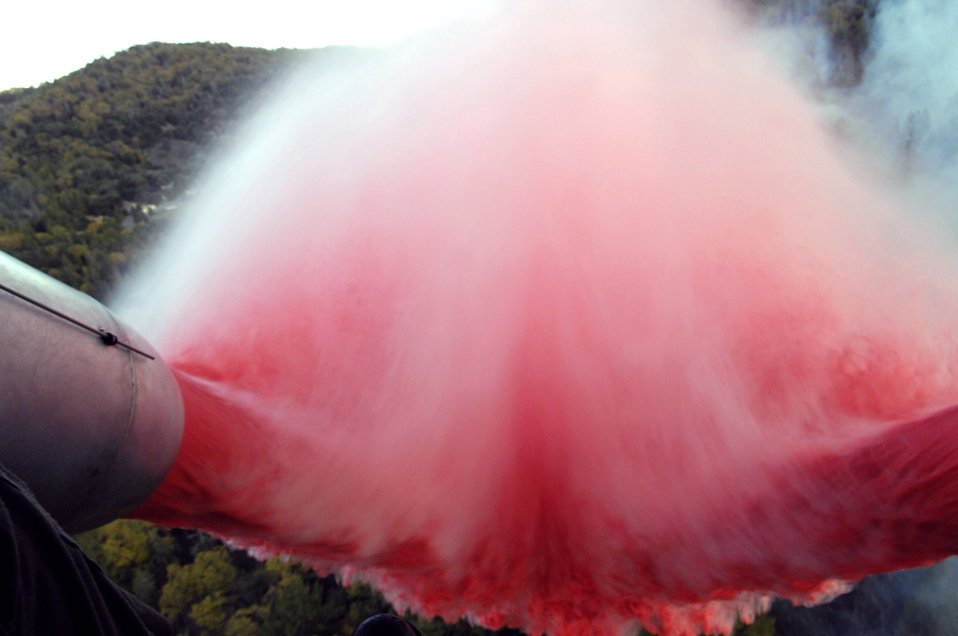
Airmen support California firefighting for sixth day

Airmen of the 302nd Air Expeditionary Group operating out of McClellan Airfield in Sacramento, Calif., and are flying C-130 Hercules aircraft that can drop 3,000 gallons of fire retardant supporting fighting fires in California. The Airmen are in their sixth day of fighting fires throughout the state.